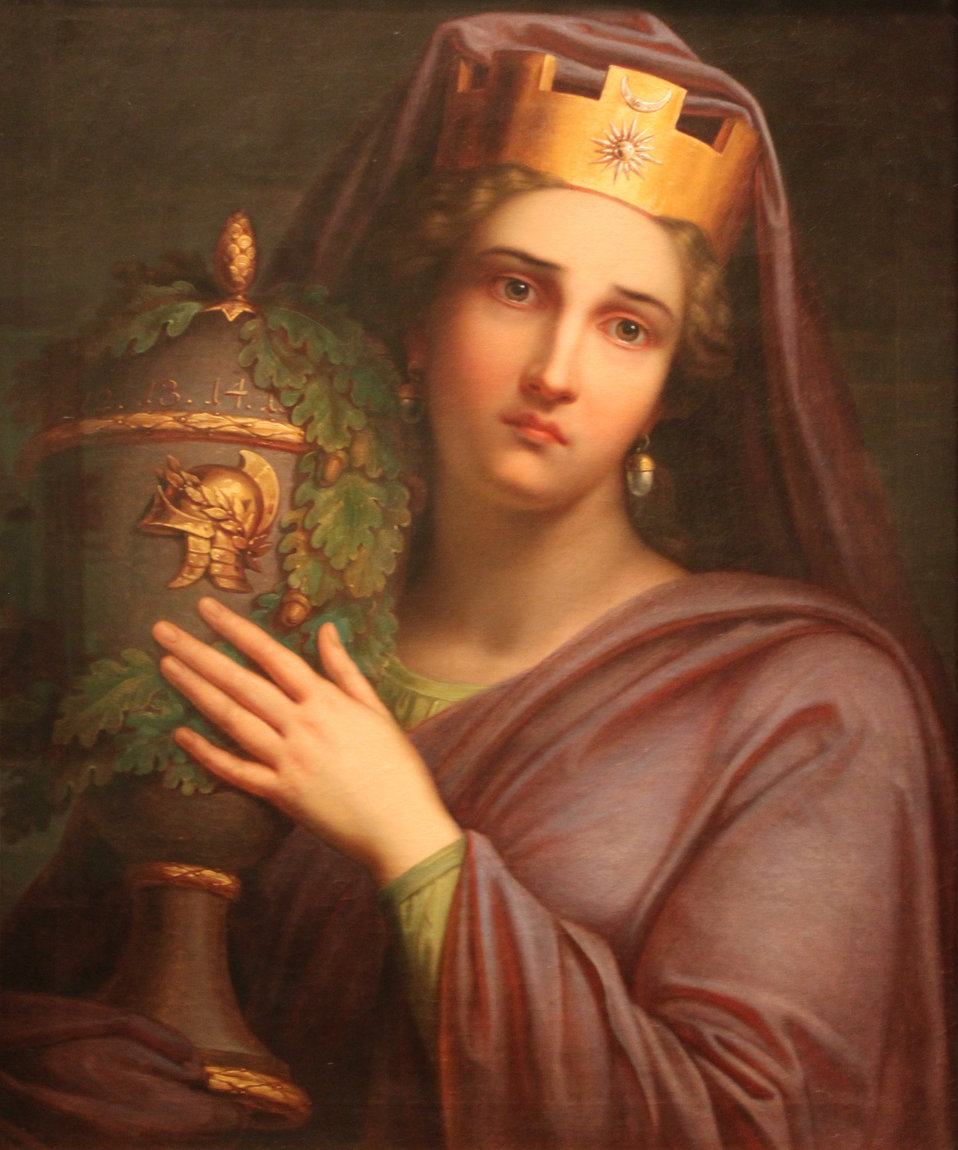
1815 Kuegelgen Allegorie der Trauer anagoria